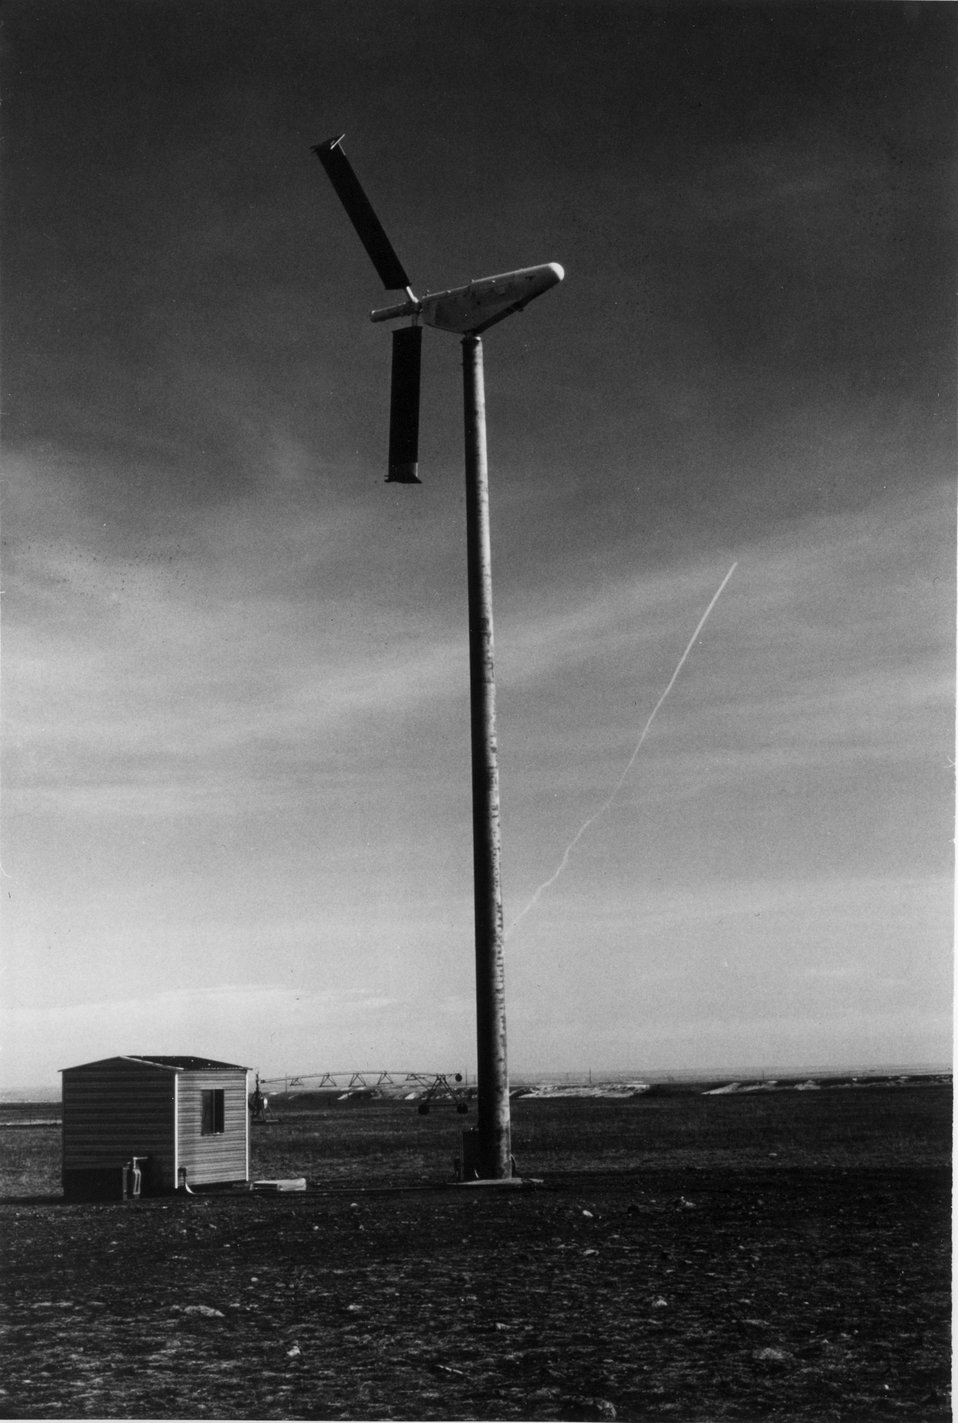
The Gruman Wind stream-25 is a three-bladed wind energy conversion system being tested at the U.S. Department of Energy's Rocky Flats, Colorado facility. c. 1977